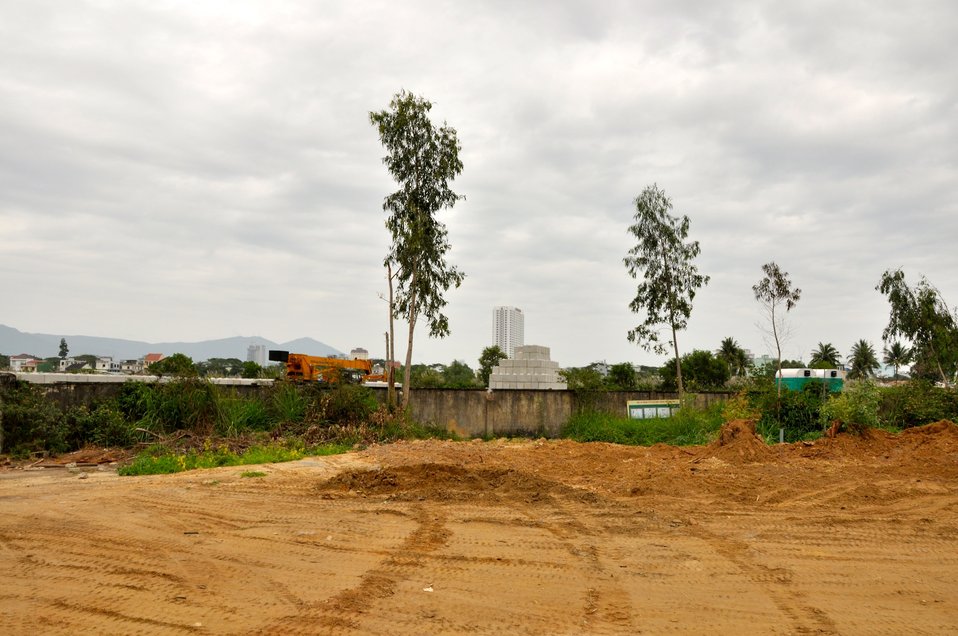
Site Preparation for Environmental Remediation of Dioxin Contamination at Danang Airport

Danang Airport, January 22, 2013